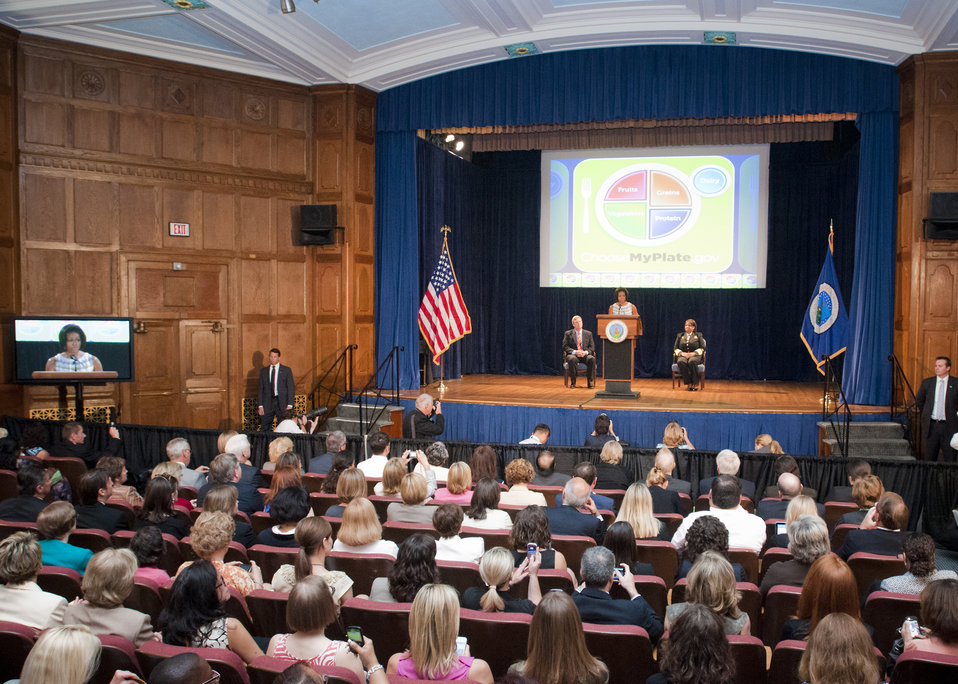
First Lady Michelle Obama talks about the new Food Icon MyPlate (L to R seated Agriculture Secretary Tom Vilsack and Surgeon General Regina Benjamin) on Thursday, Jun. 2, 2011in the Jefferson Auditorium, U. S. Department of Agriculture (USDA). This new icon will replace the USDA’s MyPyramid image as the government’s primary food group symbol. MyPlate is an easy-to-understand visual cue to help consumers adopt healthy eating habits that are consistent with the 2010 Dietary Guidelines for Americans. MyPyramid will remain available to interested health professionals and nutrition educators in a special section of the new website.